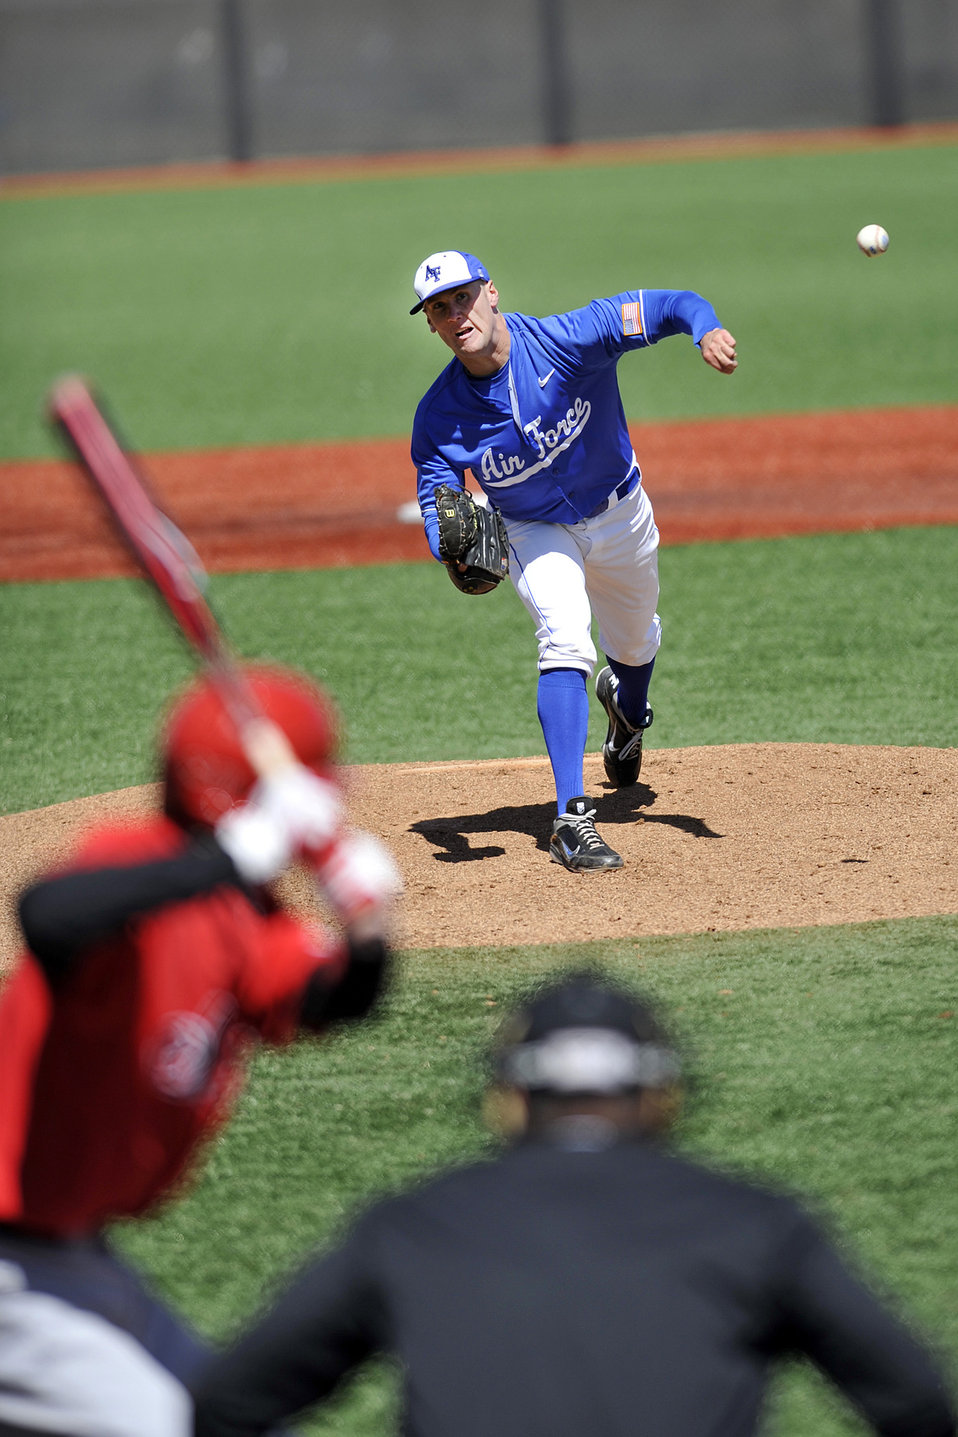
Falcons vs. Aztecs

Sophomore left-hander Ben Bertelson throws a pitch during a match against San Diego State April 22, 2011, at Falcon Field in Colorado Springs, Colo. Bertelson allowed just one hit over 8 innings as the Falcons defeated the Aztecs 7-3. The win was the first for the Falcons against the Aztecs in 35 contests dating back to 2003.